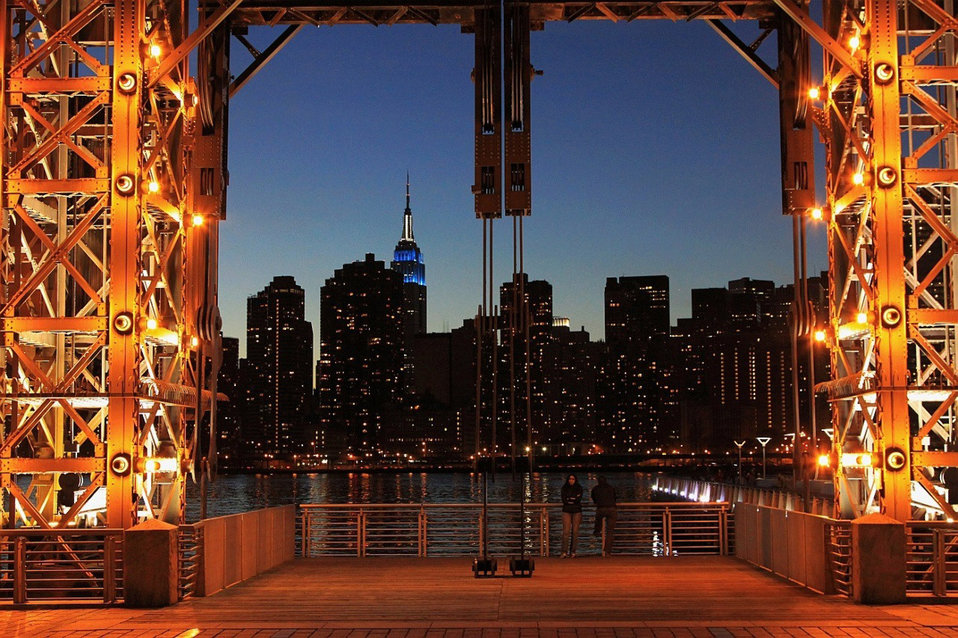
Gate to manhattan

Nyc after sunset.